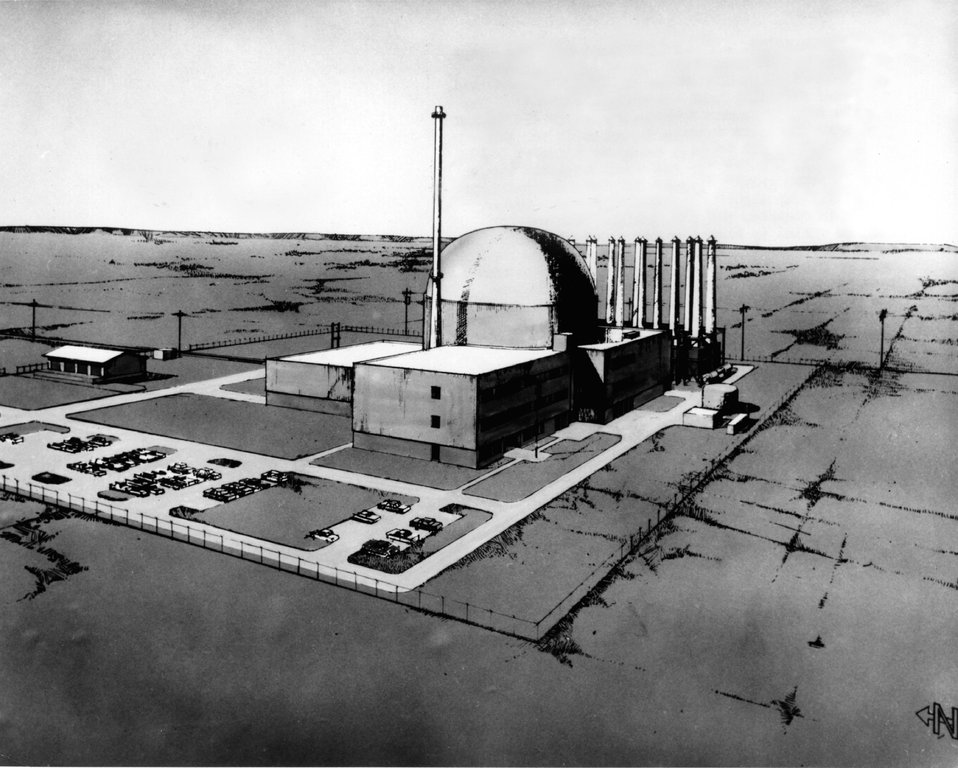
Artist's concept of the Fast Flux Test Facility. c. 1970.